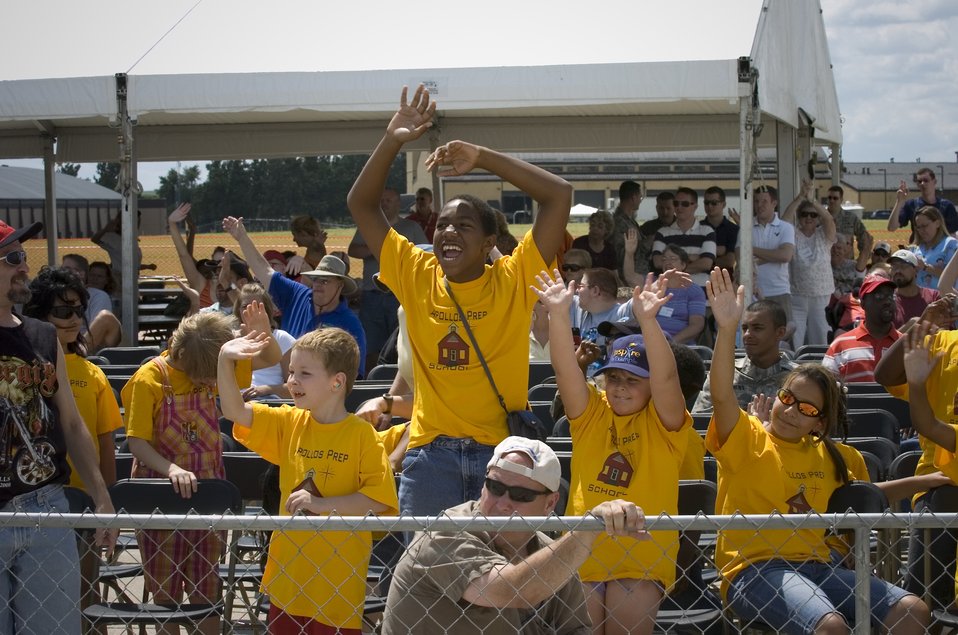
Offutt Airmen hold airshow

Children and special needs visitors watch a complete airshow that featured the U.S. Air Force Demonstration Squadron